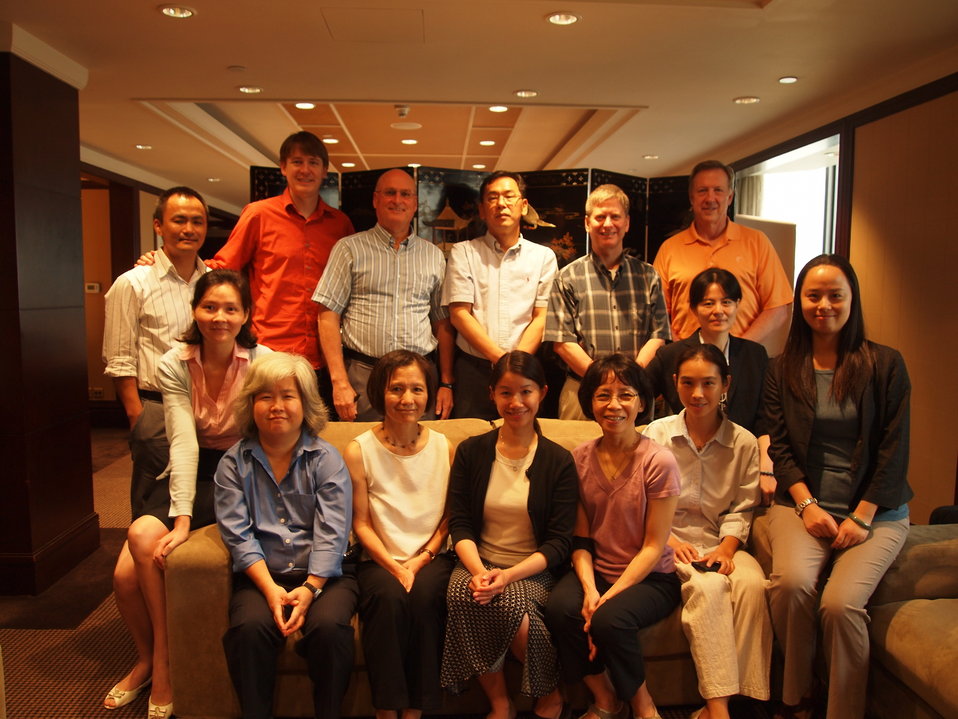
FDA’s China Offices Focus on Product Safety

Thirteen people, including five local hires, now run the China offices: (back row, left to right) Evid Liu; country director Christopher Hickey; Michael Kravchuk; Charles Ahn; Dennis Hudson; and Dennis Doupnik; (front row, left to right) Min Sun; Byungja Marciante; Brenda Uratani; Irene Chan; Astrid Szeto (at FDA headquarters); Lixia Wang; Helen Xue; and Zimei Fu. Read this FDA Consumer Update: www.fda.gov/ForConsumers/ConsumerUpdates/ucm284461.htm

Consumer Updates are a quick and easy way to pick up important health information for you and your family. For a complete list of Consumer Updates see the Consumer Updates photo set: www.flickr.com/photos/fdaphotos/sets/72157624900896241/.

For the latest Consumer Updates go to: www.fda.gov/forconsumers/consumerupdates